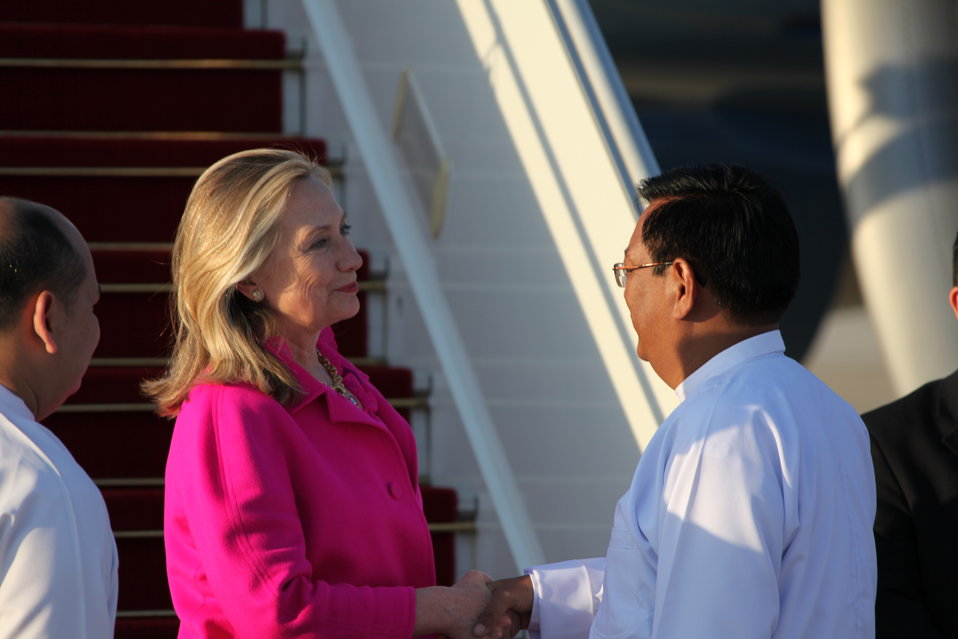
Secretary Clinton Is Greeted By Burmese Deputy Foreign Minister Dr. Myo Myint

U.S. Secretary of State Hillary Rodham Clinton is greeted by Burmese Deputy Foreign Minister Dr. Myo Myint upon her arrival in Nay Pyi Taw, Burma, on November 30, 2011.